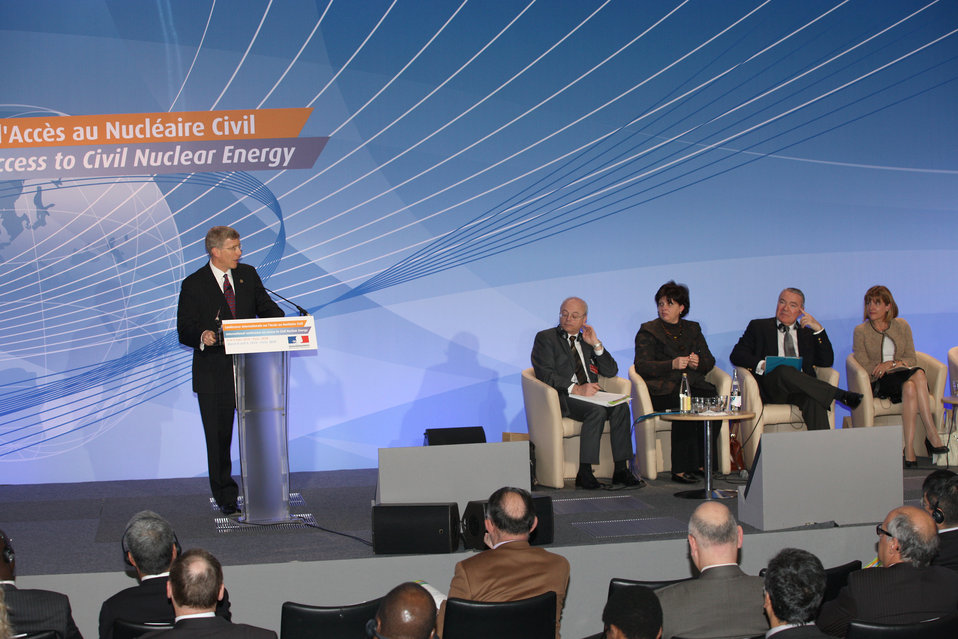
545C1302 copy